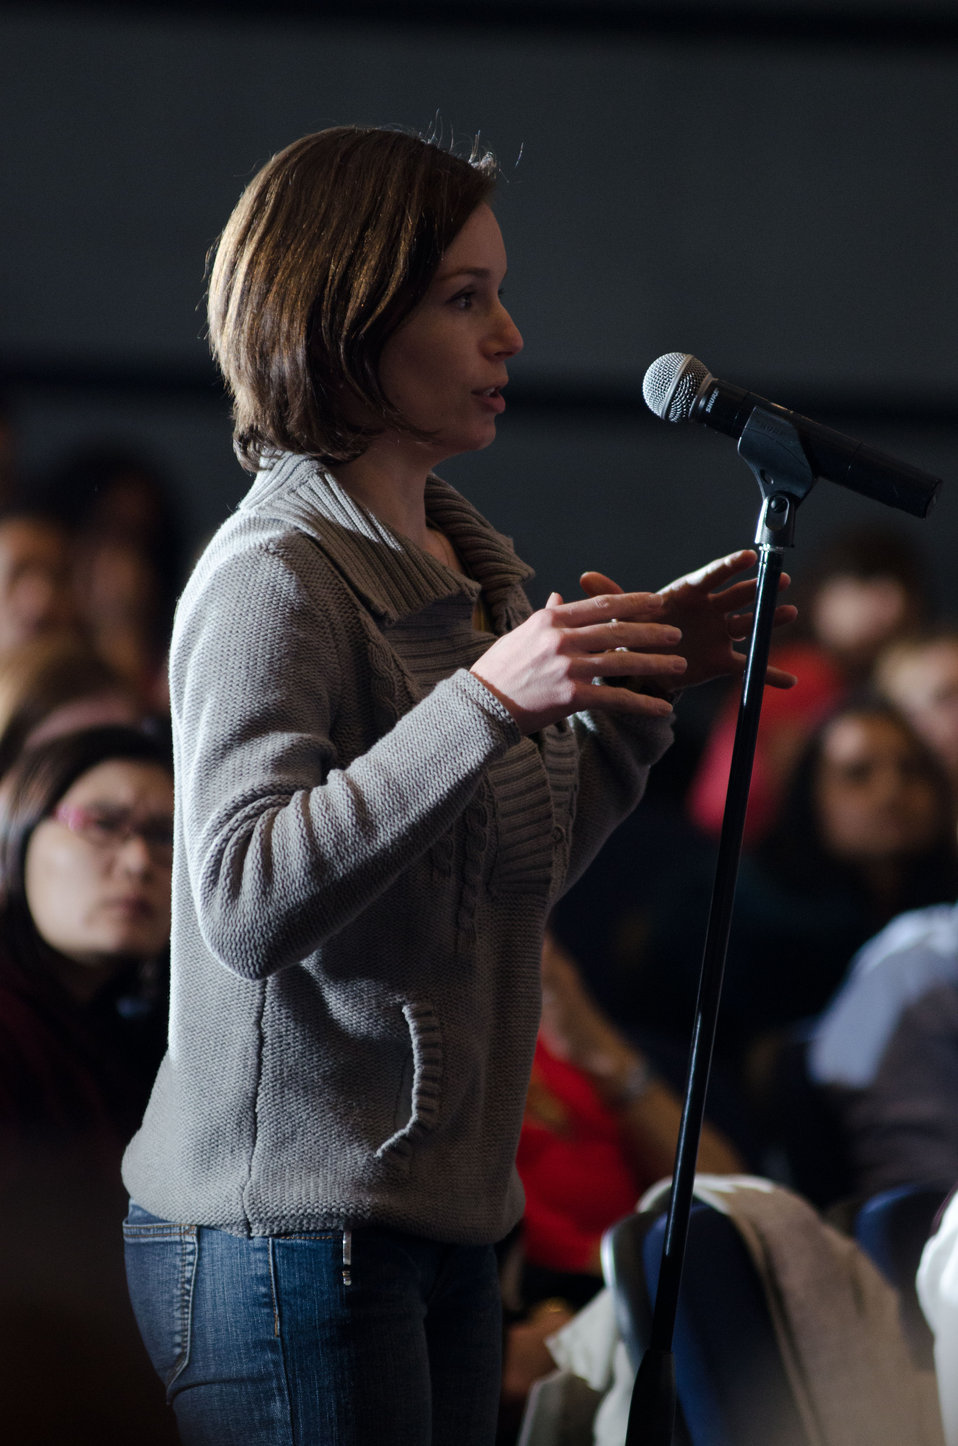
Campus Bee Keeper Heidi Wolf asks a question about pollinators, to the panelists National Sustainable Agriculture Coalition Executive Director Susan Prolman, Food Research and Action Center President Jim Weill, Michael Fields Agricultural Institute Public Policy Program Director Margaret Krome, Environmental Working Group President and Co-Founder Ken Cook, Agriculture Deputy Secretary Kathleen Merrigan and Former Agriculture Secretary and moderator Dan Glickman at the “Shaping the Farm Bill for a Sustainable Future” Forum in the Jack Morton Auditorium, at the Trachtenberg School of Public Policy and Public Administration, on the George Washington University campus in Washington, D.C., on Thursday, March 1, 2012.